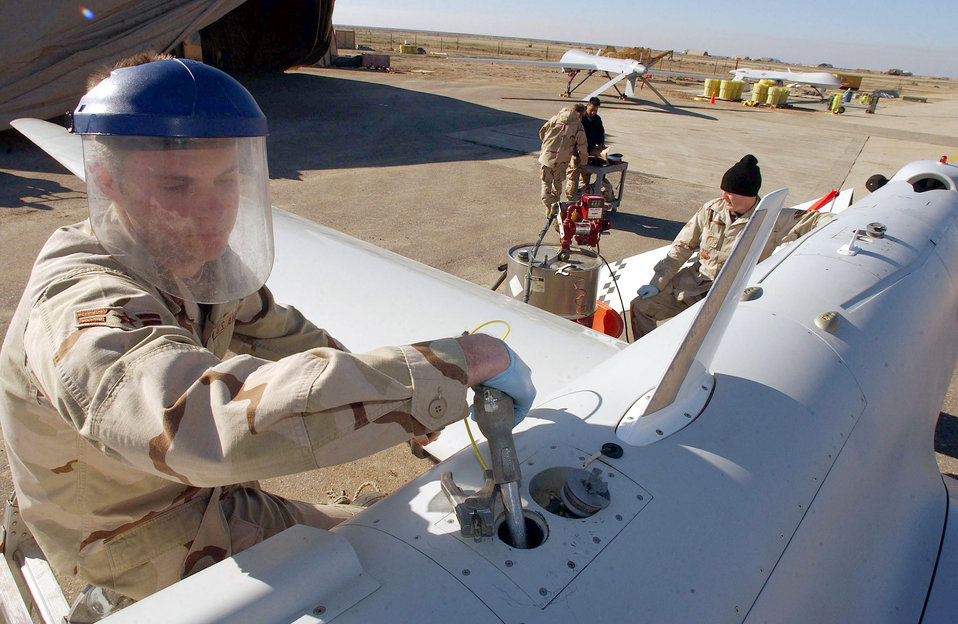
Fueled up

TALLIL AIR BASE, Iraq -- Airman 1st Class Ray Frazee fuels an RQ-1 Predator aircraft here Jan. 20. Airman Frazee is assigned to the 46th Expeditionary Air Reconnaissance Squadron.